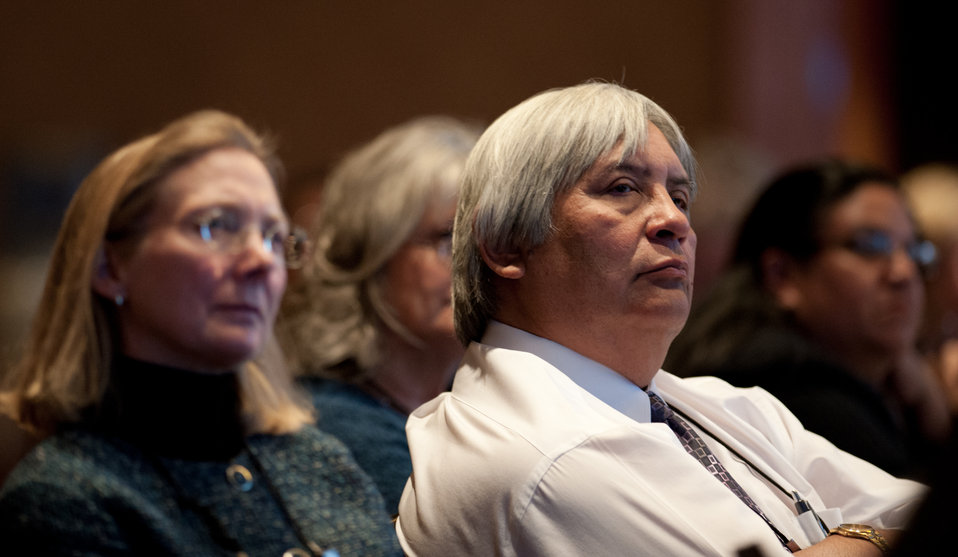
Indian Transmission Forum

Attendees at the DOE Office of Indian Energy Tribal Leader Energy Forum on transmission held February 2012 in Denver, Colorado.